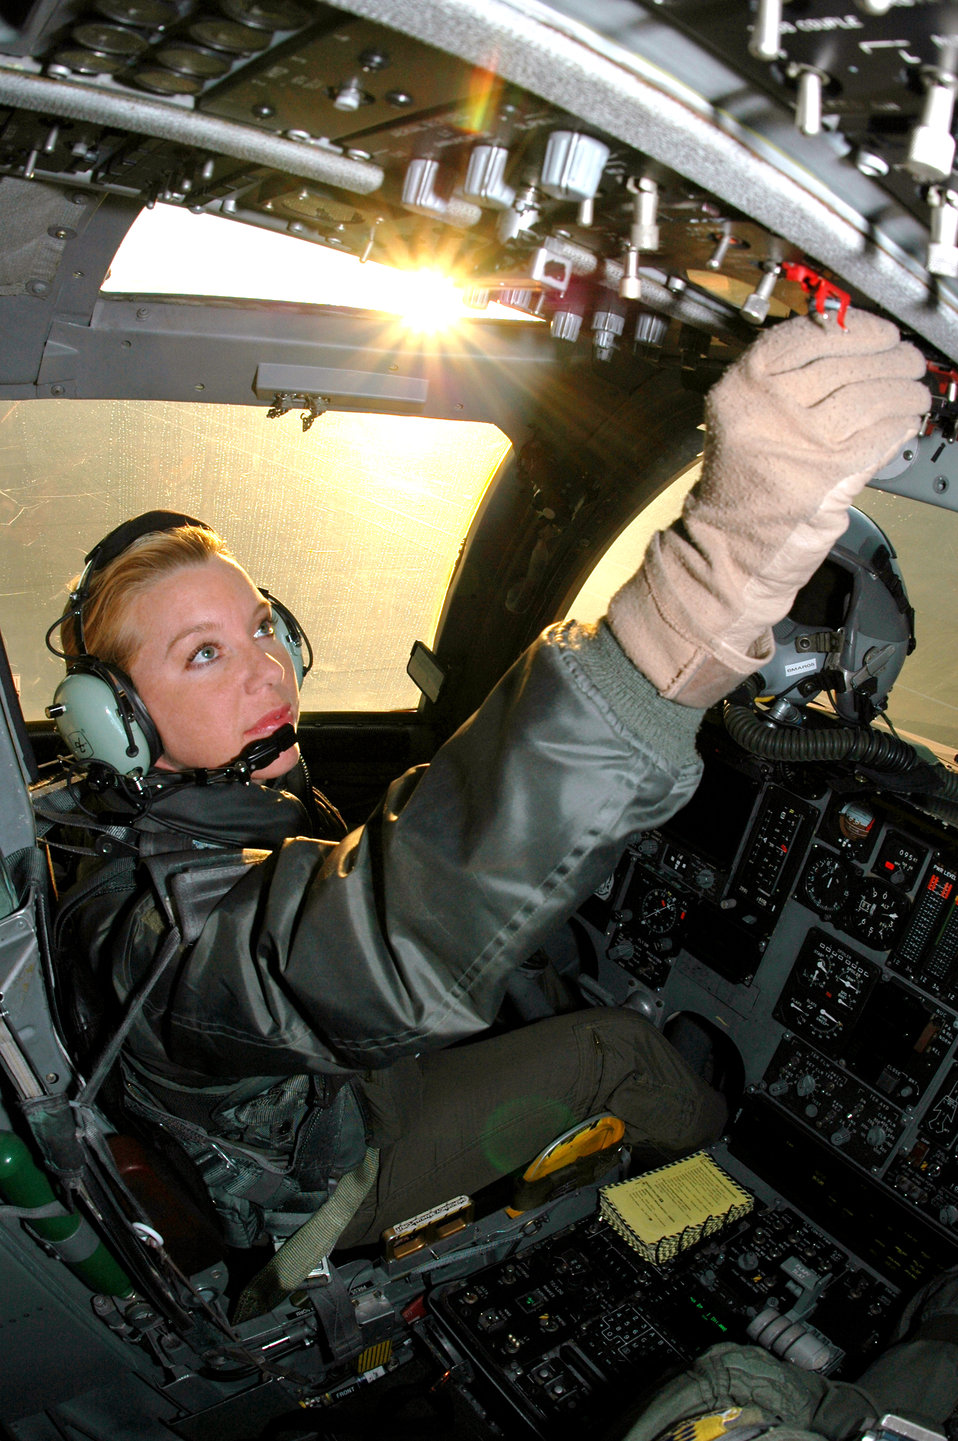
Women command airspace in combat pilot positions

ELLSWORTH AIR FORCE BASE, S.D. -- Capt. Kim Black performs preflight checks here March 2. She has flown B-1 Lancers for more than 9 years and is currently the only female pilot in the 37th Bomb Squadron.